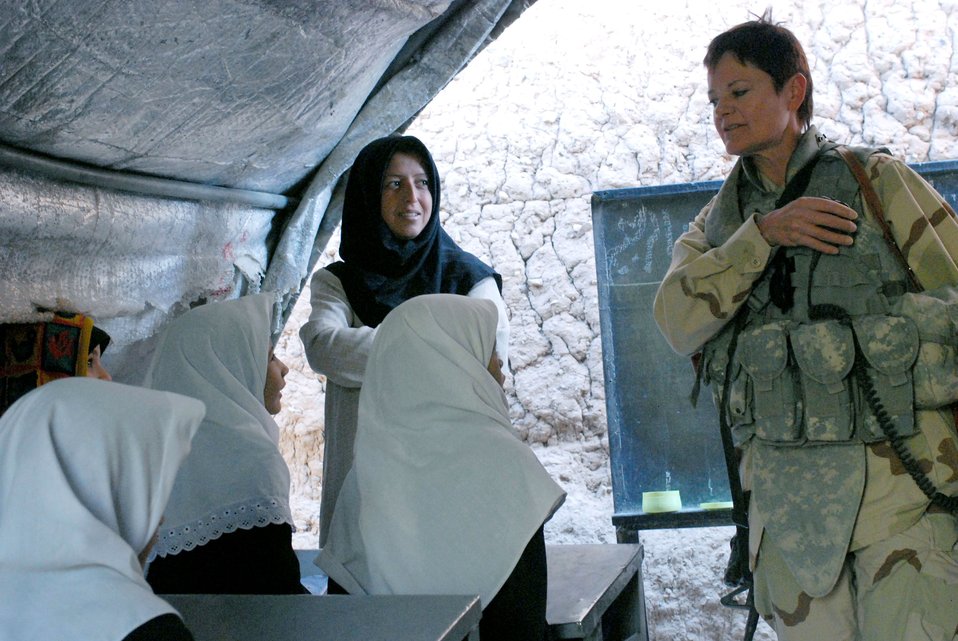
Servicemembers reach out to Afghanistan women

Navy Senior Chief Petty Officer Darlene Gonzales (right) talks with a school teacher and her students at an elementary school Sept. 29 in Herat, Afghanistan. Senior Chief Gonzales, a contracting team leader for the Afghan Regional Security Integration Command-West at Camp Stone in Herat, and nine other U.S. military women met with female teachers to drop off donated and requested supplies and to discuss ways coalition and the Afghan national security forces could be of assistance to the school and to Afghan women in general.